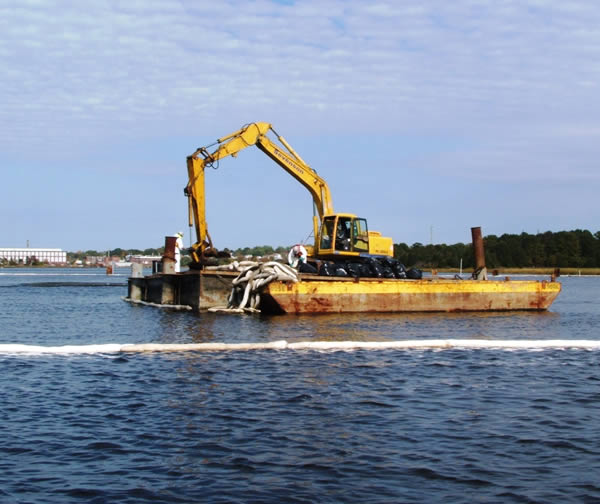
October 2009, Used oil boom is collected for proper disposal